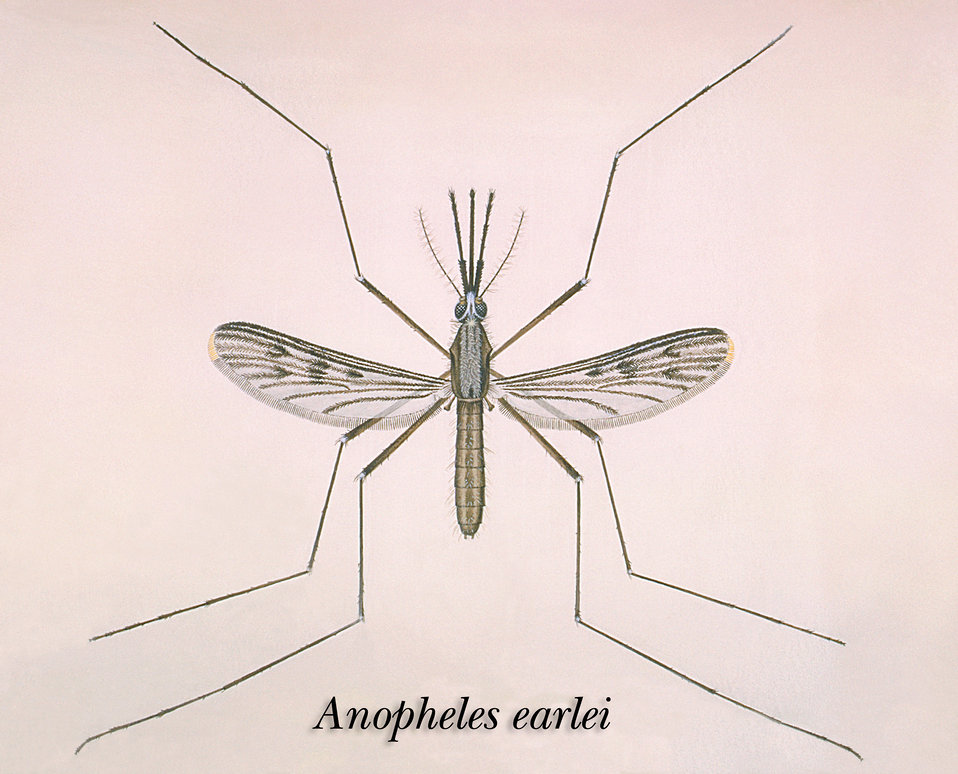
An illustration of an Anopheles earlei mosquito.